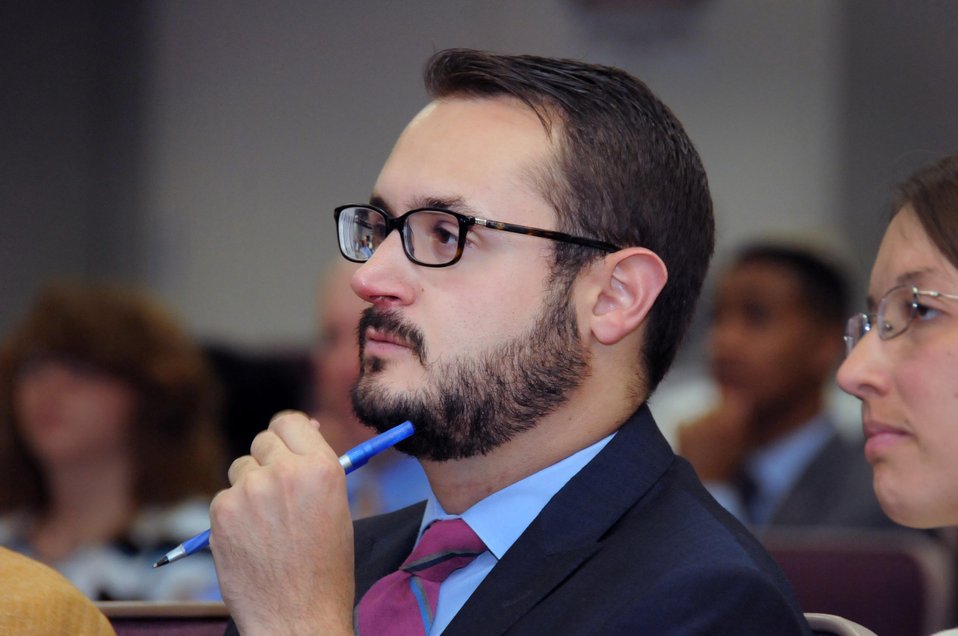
Stakeholders, government and regional leaders listen to Agriculture Deputy Secretary Krysta Harden at the White House Summit on Working Families in Petersburg, VA on Wednesday, Jun. 11, 2014. This forum is part of a series of regionally hosted conversations leading up to the June 23 White House Summit on Working Families, at the Virginia State University, in Petersburg, VA on Wed. June 11, 2014.